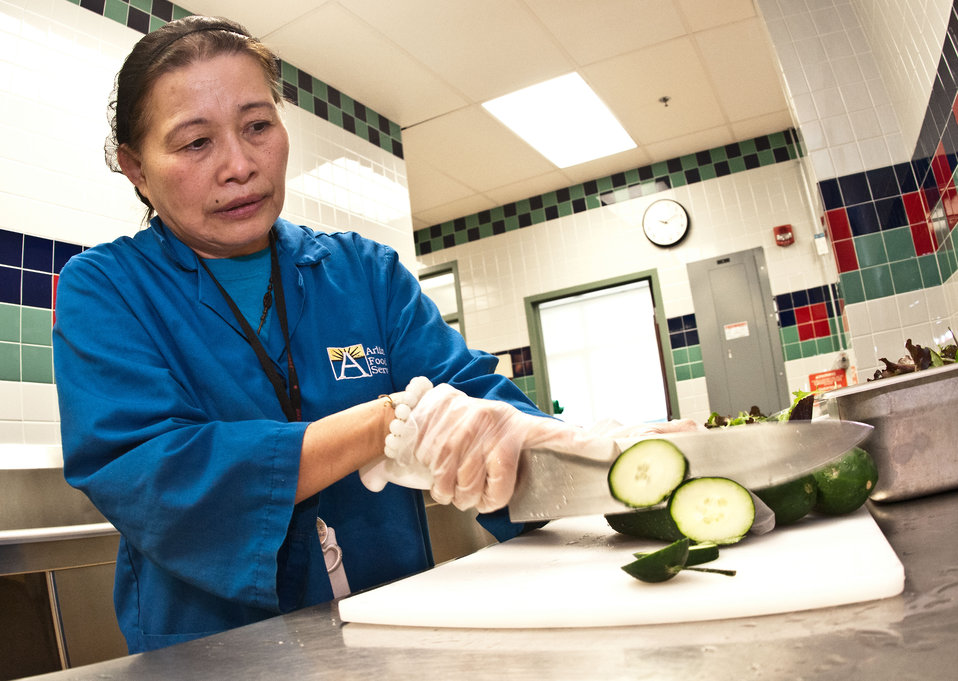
Food Service Manager Hoa Tran slices cucumbers for salads at the Nottingham Elementary School in Arlington, VA, on Wednesday, October 12, 2011. Today's menu included roasted chicken, roasted butternut squash with dried cranberries, farm fresh mixed lettuce salad, turkey wraps, pita wedges, hot muffins, carrots, Asian pears and more.